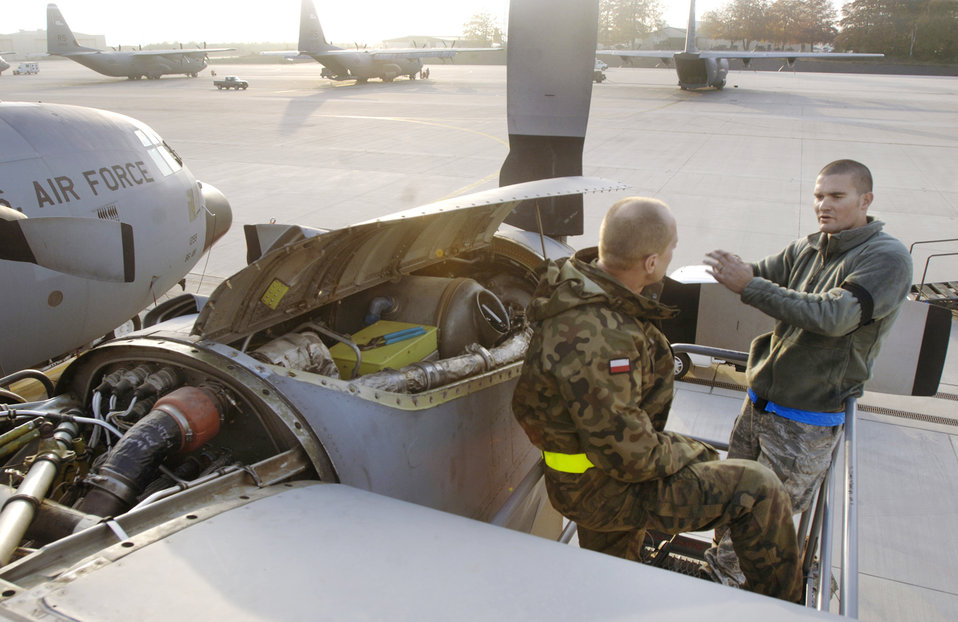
C-130 arrival in Poland marks end, new beginning

Staff Sgt. Matthew Parker works with Polish air force Chief Warrant Officer Daniel Orlowski in tracing an electrical problem on the No. 4 engine of the last in a series of E-model C-130 Hercules aircraft Oct. 29, 2009, at Ramstein Air Base, Germany. The two mechanics, assigned to the 86th Aircraft Maintenance Squadron and 33rd Air Base Group, respectively, were completing a week-long home station check before the aircraft is transferred to the Polish air force's 14th Airlift Squadron at Powidz Air Base, Poland, as part of a program for building partnership capacities between the United States and its allies.